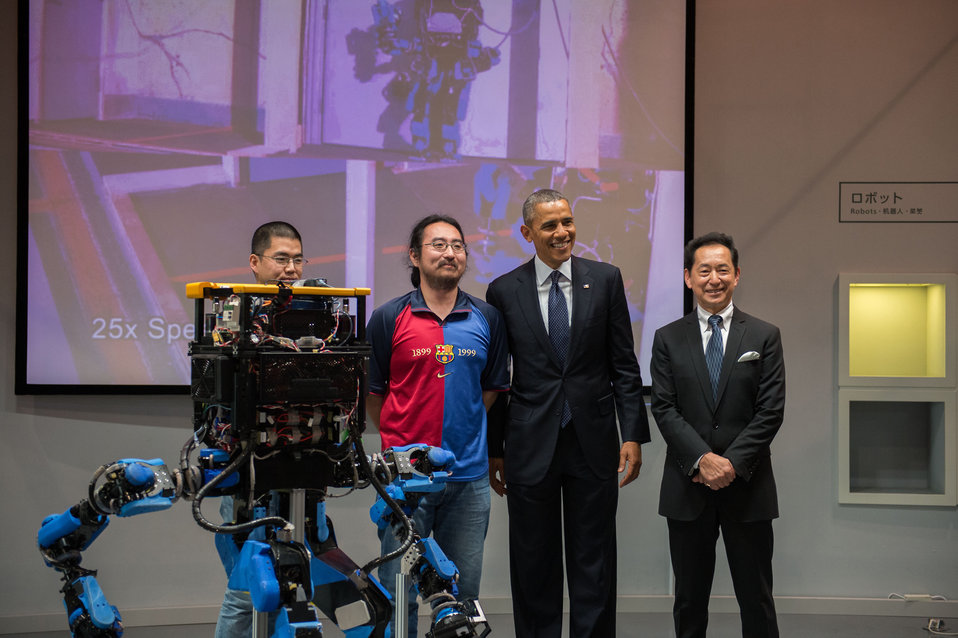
President Obama Poses for a Photo with SCHAFT Robot Designers

U.S. President Barack Obama, with Executive Director Mamoru Mohri of the Miraikan (the National Museum of Emerging Science and Innovation) and two of the designers of the SCHAFT robot, poses for a photo during his visit to the museum in Tokyo, Japan, on April 24, 2014.